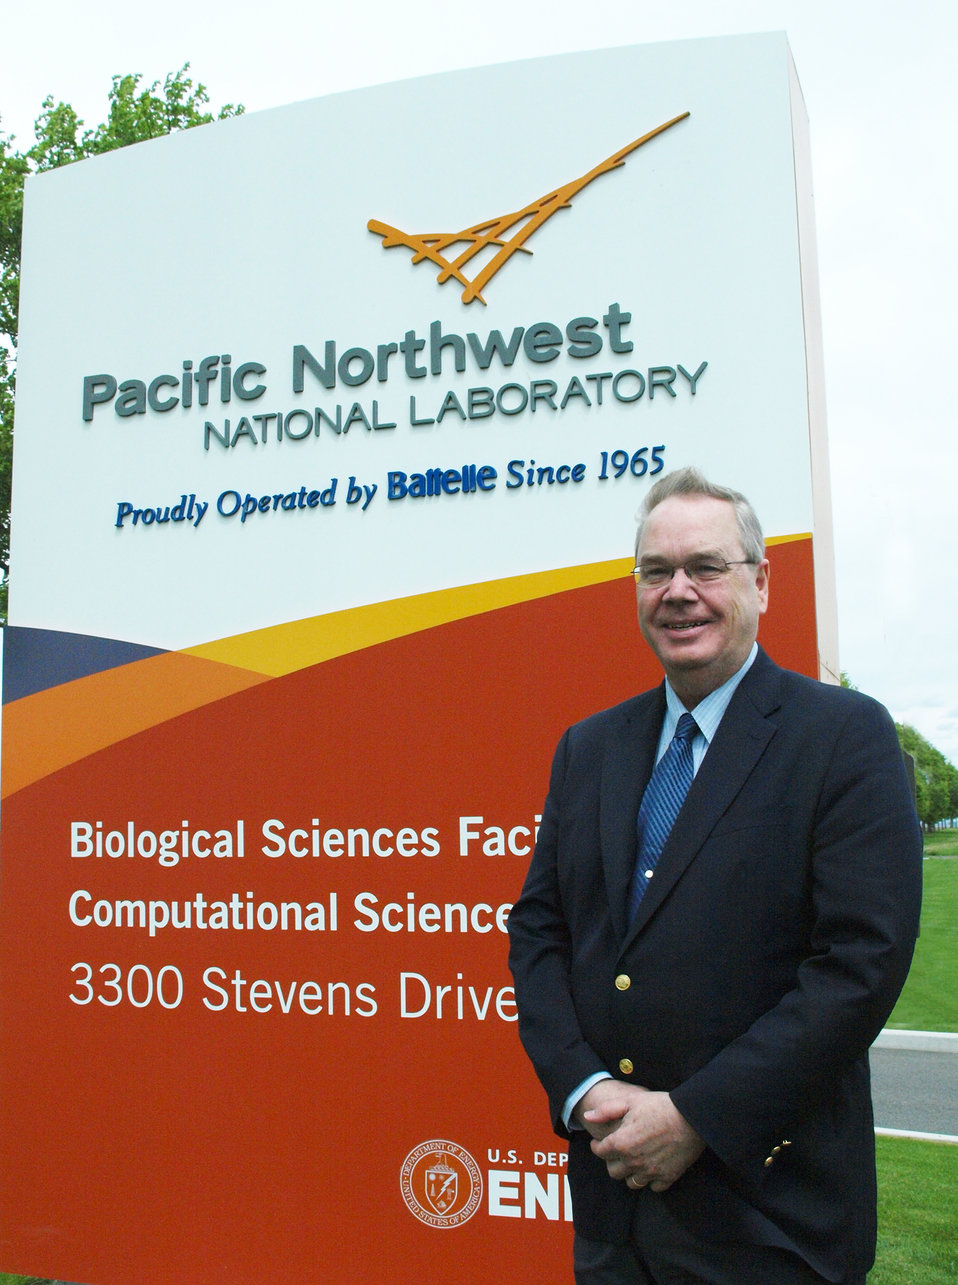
Under Secretary for Rural Development, Dallas Tonsager recently visited the Pacific Northwest National Laboratory in Richland, Wash., with other members of a technical advisory committee exploring ways to further the use and development of advanced bio-fuels.